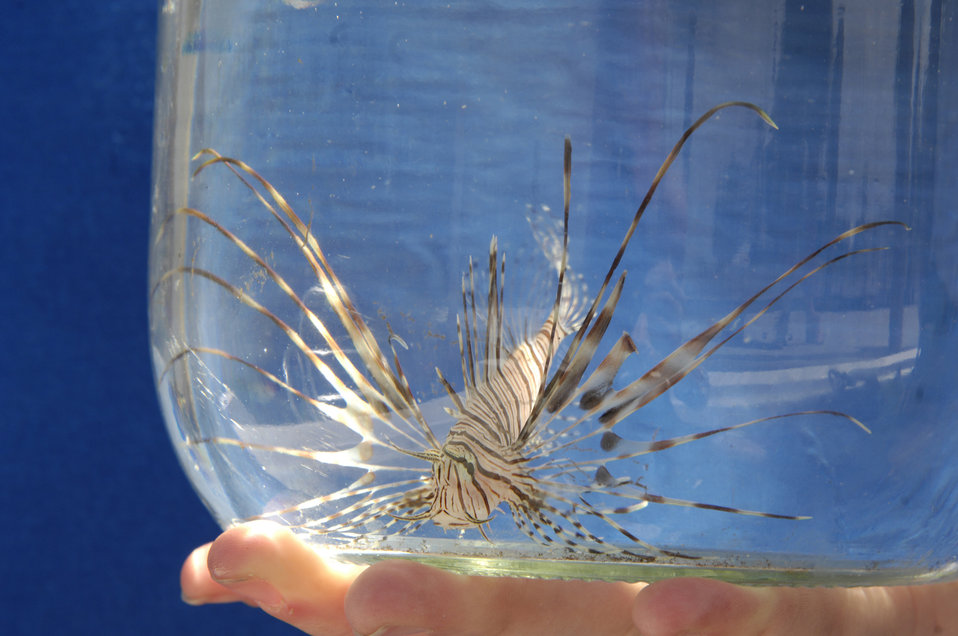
The exotic red lionfish (Pterois volitans) was captured in Everglades National Park, Florida on April 6, 2010. The lionfish is a venomous predatory fish native to the Indian and Pacific oceans and first observed in South Florida in the 1980s. The rapid expansion of the lionfish invasion throughout the southeastern Atlantic seaboard, the Caribbean and parts of the Gulf of Mexico is of great concern to the National Park Service and other marine resource managers. Lionfish are voracious predators of fish and invertebrates capable of removing tremendous amounts of prey and causing ecological impacts to coral reefs and other habitats, which are already stressed by coral bleaching, fishing pressure, pollution and other impacts. Lionfish also present risks of stings from their venomous spines to visitors and employees. A species is considered invasive it is nonnative to the ecosystem and its introduction causes or is likely to cause economic or environmental harm or harm to human health. The goal of the U.S. Department of Agriculture’s (USDA) Forest Service (FS) invasive species program is to reduce, minimize, or eliminate the potential for introduction, establishment, spread, and impact of invasive species across all landscapes and ownerships.